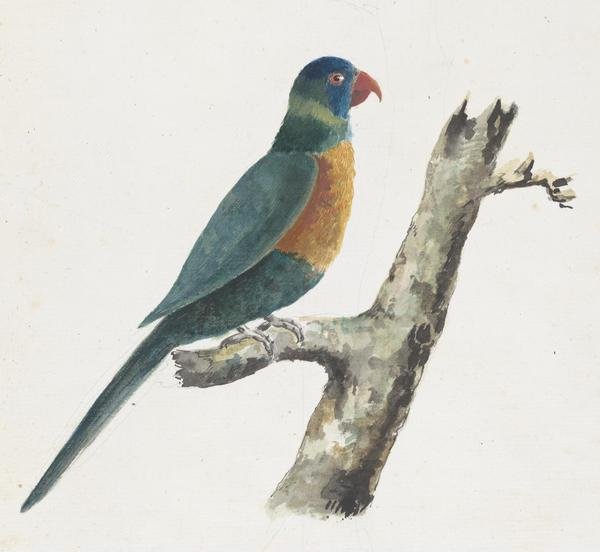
'Green Parrot', watercolor painting by Adrien Taunay the younger